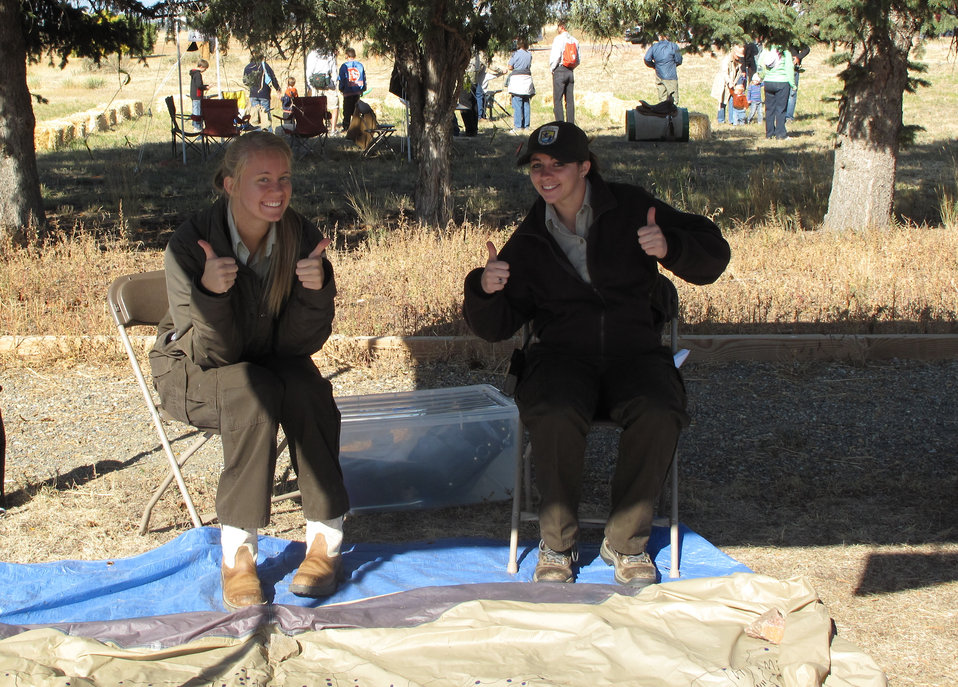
Refuge Round-up 2010

Refuge spirit!!